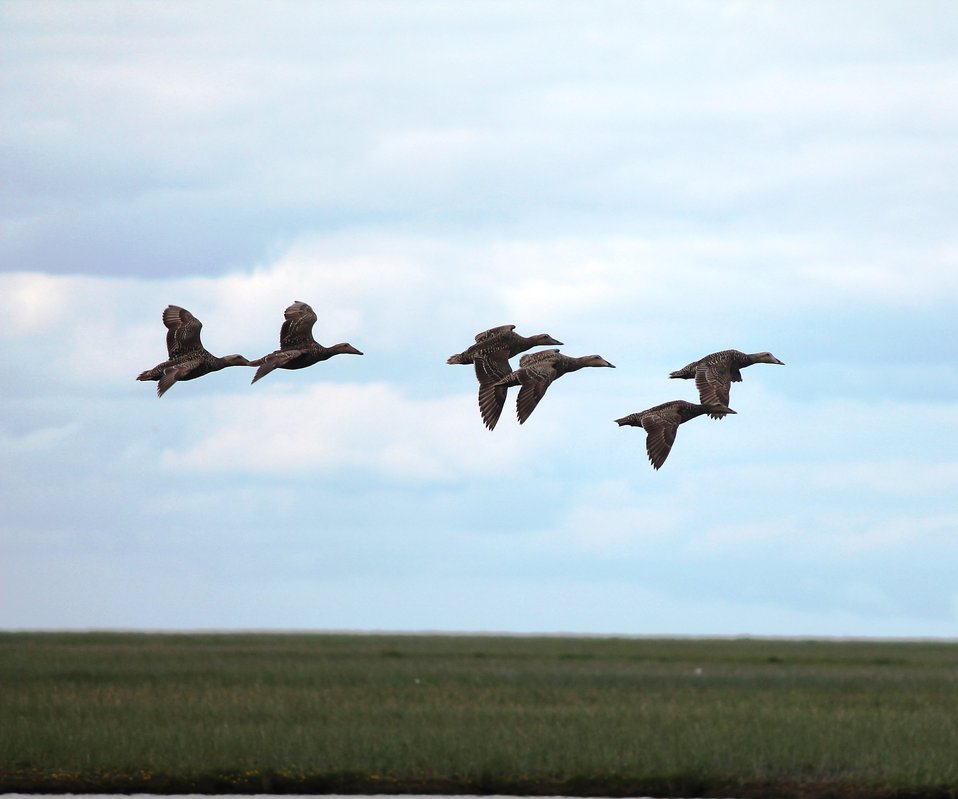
Non-breeding Common Eider Flock

A group of juvenile Common Eiders. Common eiders do not breed until they are 2-3 years old.

USFWS Yukon Delta NWR